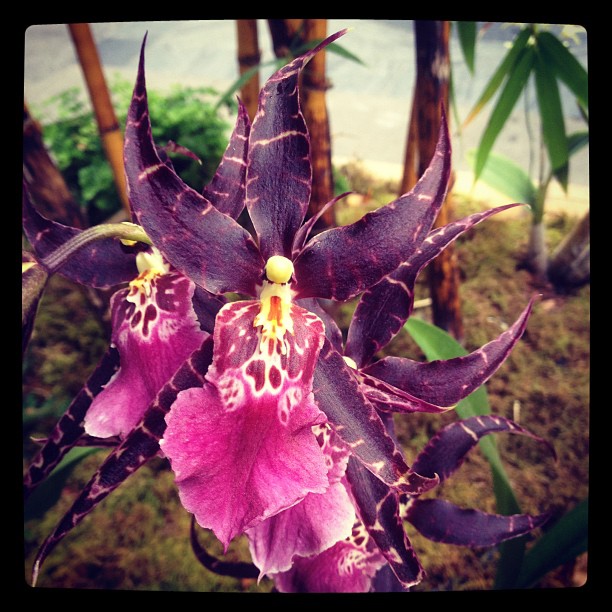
Aliceara Memoria Jay Yamada 'Kauai' Orchid

Orchid Mystique: Nature’s Triumph
February 18 – April 29, 2012
Conservatory Garden Court and East Gallery

Orchid Mystique: Nature’s Triumph will observe the 100th anniversary of Japan’s gift of the cherry blossom trees to Washington, D.C., by presenting our orchids in settings evocative of Japanese gardens. The tranquility of the Japanese aesthetic invites appreciation of the beauty, form and exquisite floral complexity of nature’s most diverse plant family.